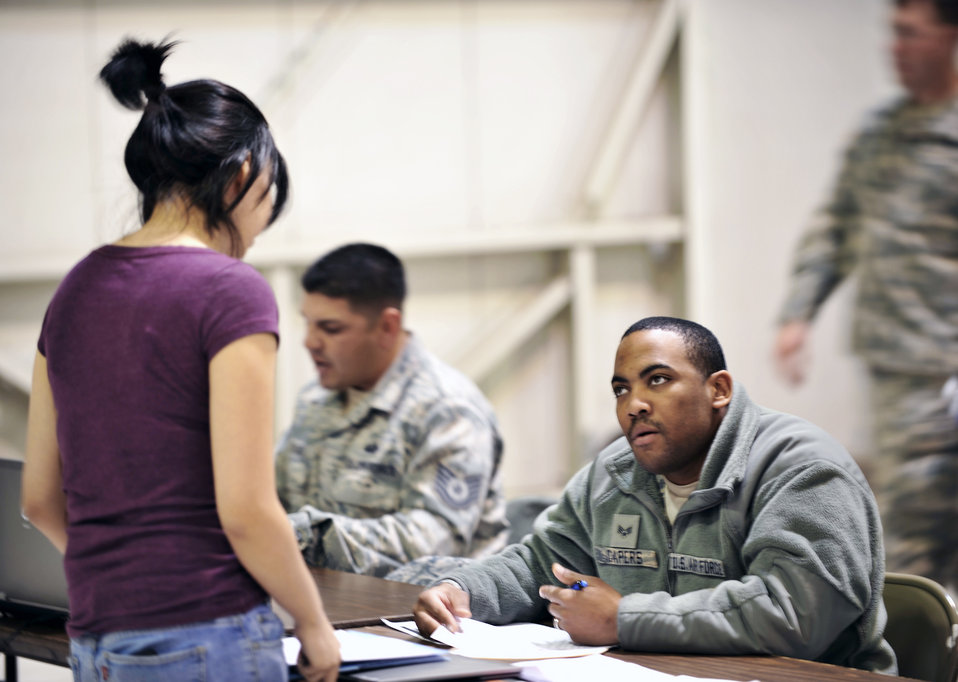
Military family members arrive

Airmen assist with the inprocessing of military family members arriving from Japan March 24, 2011, in Denver. Family members voluntarily evacuated from Japan due to the recent natural disaster.